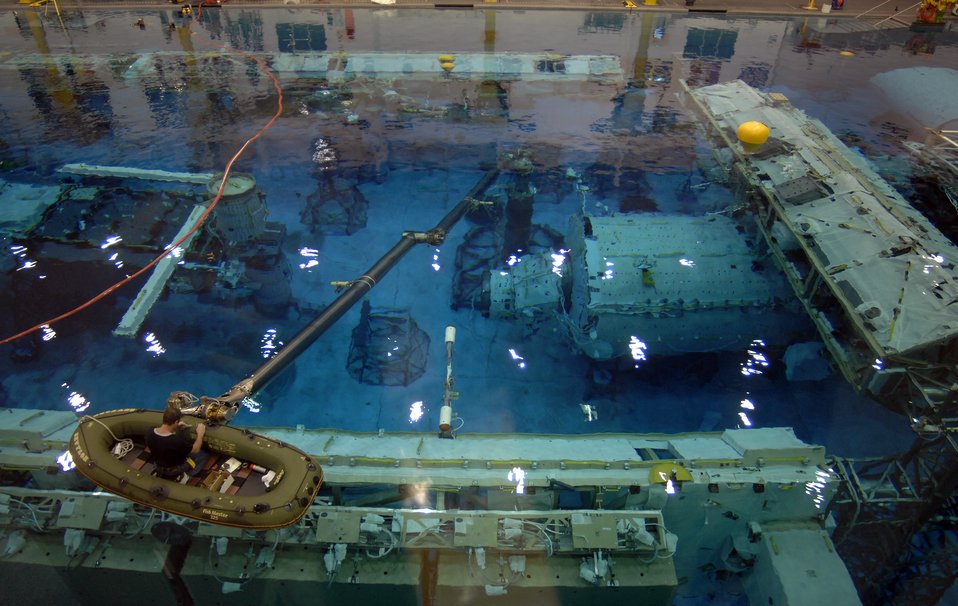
Airmen train to walk among the stars

A technician works on the full-size mock-up of the International Space Station inside the Neutral Buoyancy Lab Dec. 15 at the Johnson Space Center in Houston. The lab is the world's largest indoor pool containing 6.2 million gallons of water, which is re-filtered every 18 hours.